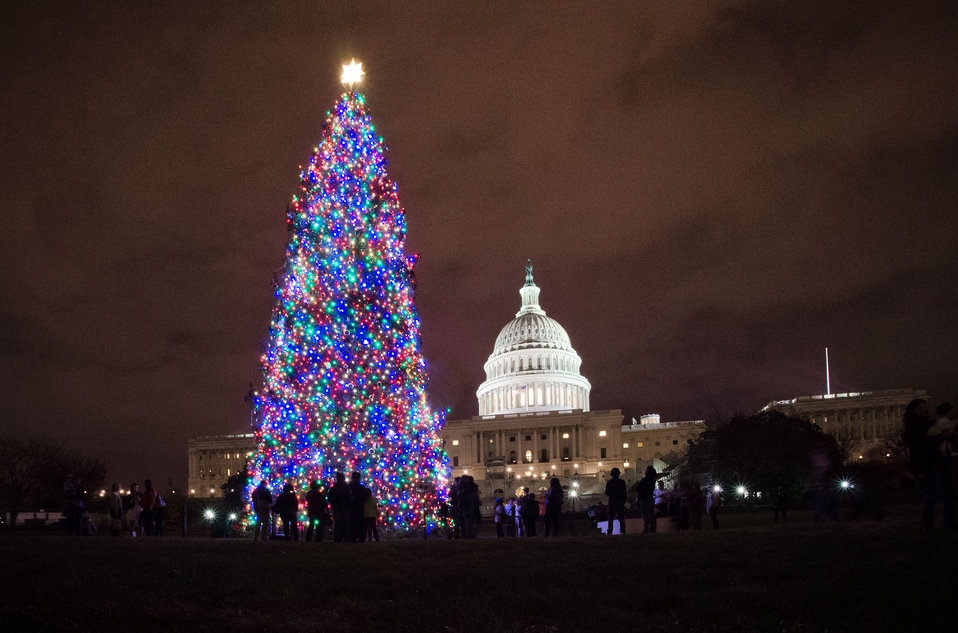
The lights of the 2012 U.S. Capitol Christmas Tree from the Blanco Ranger District of the White River National Forest near Meeker, CO; and decorated with hand-made ornaments, was switched on by Colorado Springs high school student Ryan Shuster and House Speaker John Boehner, on Tuesday, Dec. 4, 2012 at the U.S. Capitol in Washington, D.C. Since November, the tree visited dozens of cities across the country as it made its way arriving here on Nov.26, 2012. The 73-foot Englemann spruce traveled from the White River National Forest in Colorado. Other representatives as well as Natural Resources and Environment Under Secretary Harris Sherman spoke during the ceremony.